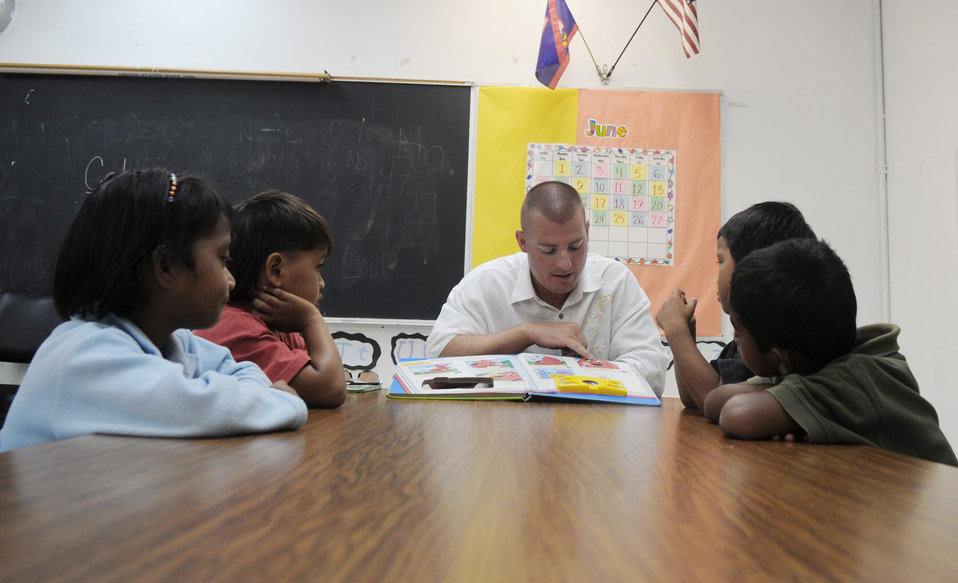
Airmen spend time with students during deployment

Tech. Sgt. Raven Worley reads to kindergarten and first graders June 19 at Machananao Elementary School in Agana, Guam. The Fort Oglethorpe, Ga., native is deployed to Andersen Air Force Base, Guam, from Elmendorf AFB, Alaska, to support U.S. Pacific Command's continuous bomber presence in the Asia-Pacific Region. Sergeant Worley is a weapons load crew team chief wiith the 525th Expeditionary Aircraft Maintenance Unit.